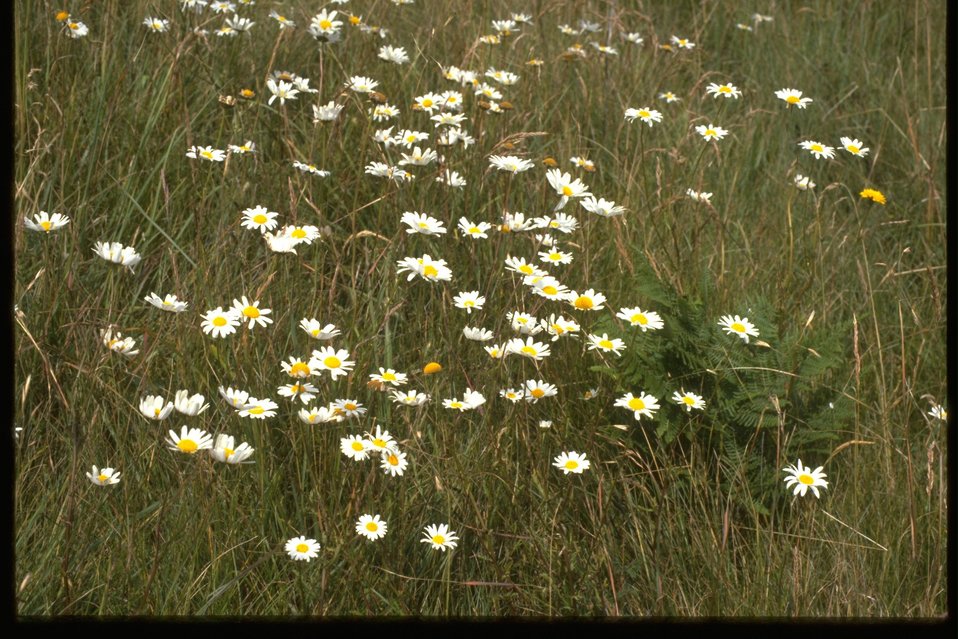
Ox-eye Daisies.